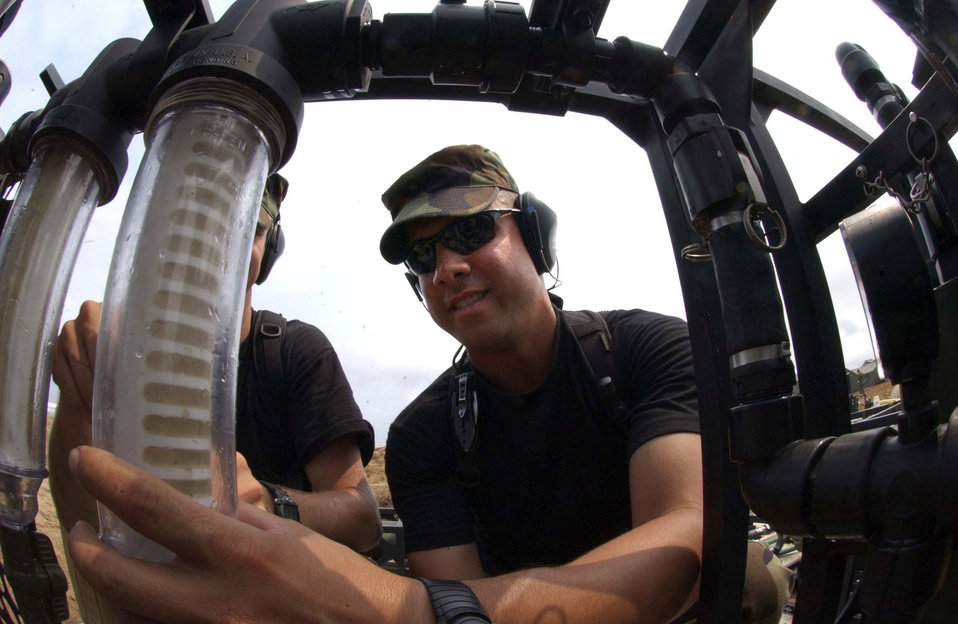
Clean water

ANGOLA, Africa -- Tech. Sgt. Hector Nieves purifies water through a reverse osmosis water purification system Sept. 8. The team, assigned to the 212th Mobile Army Surgical Hospital, is providing purified water for 197 people assigned to the joint task force. The five-person team purifies more than 3,000 gallons of sea water for the deployed unit daily in support of Med Flag 2005. Sergeant Nieves is assigned to the 86th Air Mobility Squadron at Ramstein Air Base, Germany.